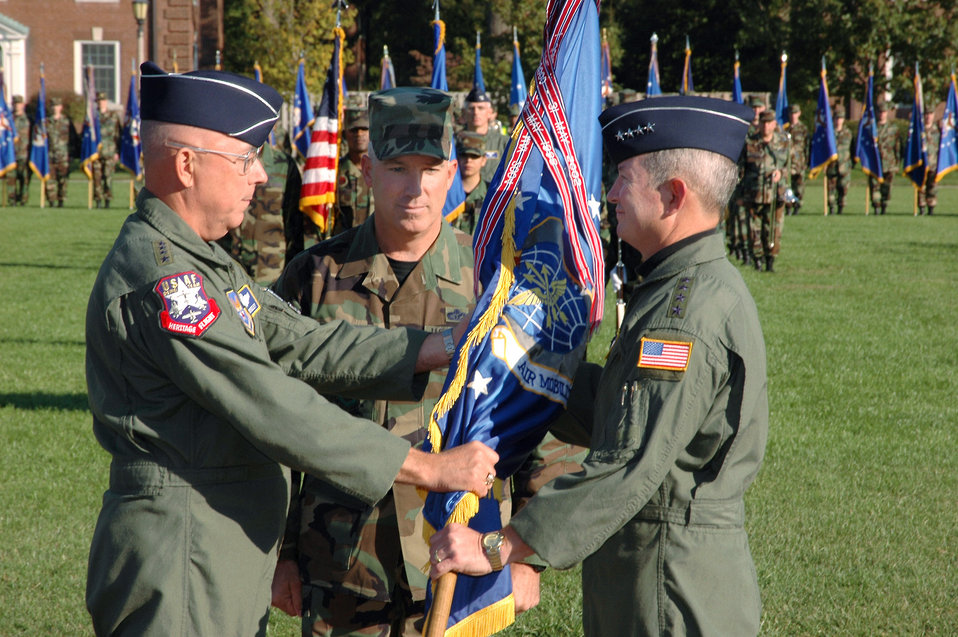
General McNabb takes command of AMC

SCOTT AIR FORCE BASE, Ill. -- Gen. T. Michael Moseley, far left, Air Force Chief of Staff, transfers command of Air Mobility Command to Gen. Duncan McNabb. The assumption of command took place here Oct. 14.